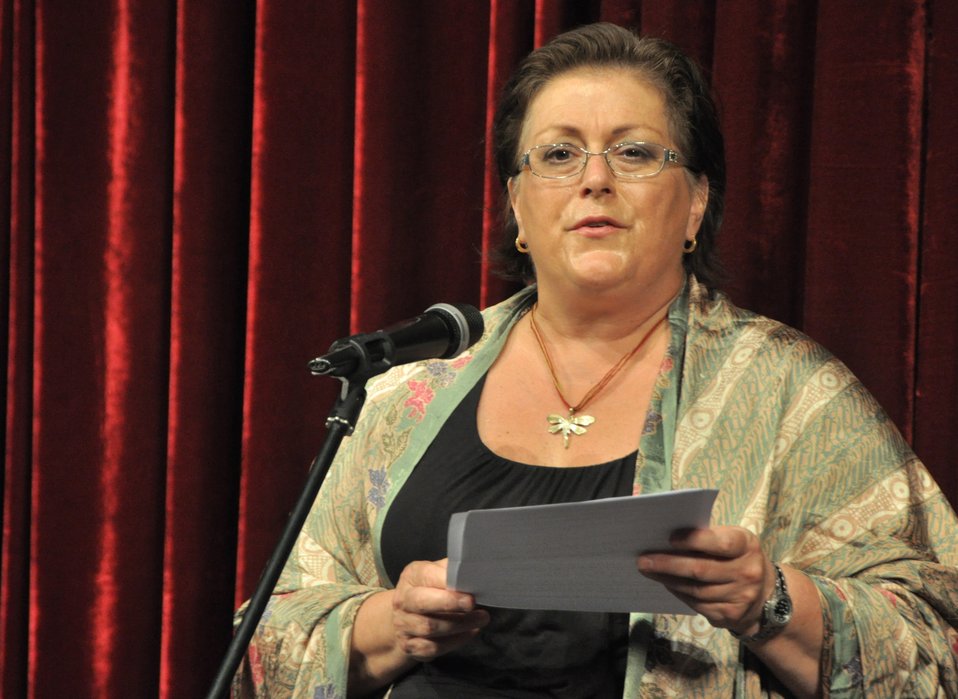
PEPFAR Musical Questions and Exclamations

U.S. Embassy Deputy Chief of Mission Claire Pierangelo speaks at the musical in Hanoi on May 17, 2013.